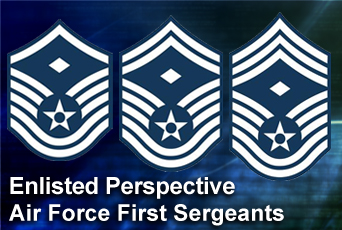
Enlisted Perspective

In the newest